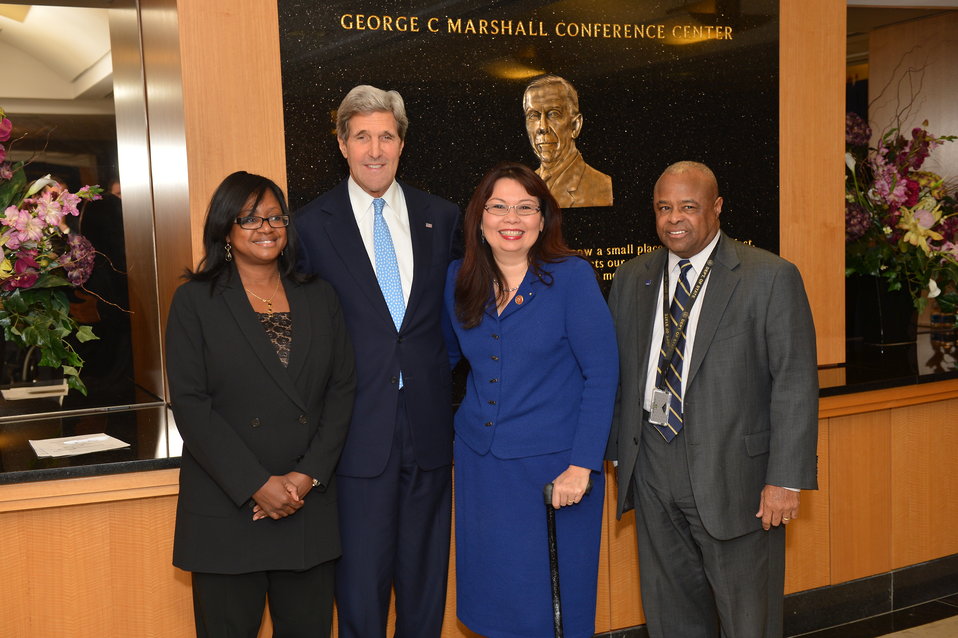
Ambassador Jenkins, Secretary Kerry, Congresswoman Duckworth, and Director Robinson Pose for a Photo

From left to right, Ambassador Bonnie Jenkins, U.S. Secretary of State John Kerry, U.S. Representative and decorated Iraq veteran Tammy Duckworth of Illinois, and John Robinson, Director of the Office of Civil Rights and Chief Diversity Officer, pose for a photo before an event hosted by the Office of Civil Rights to commemorate Veterans Day at the U.S. Department of State on November 13, 2013.